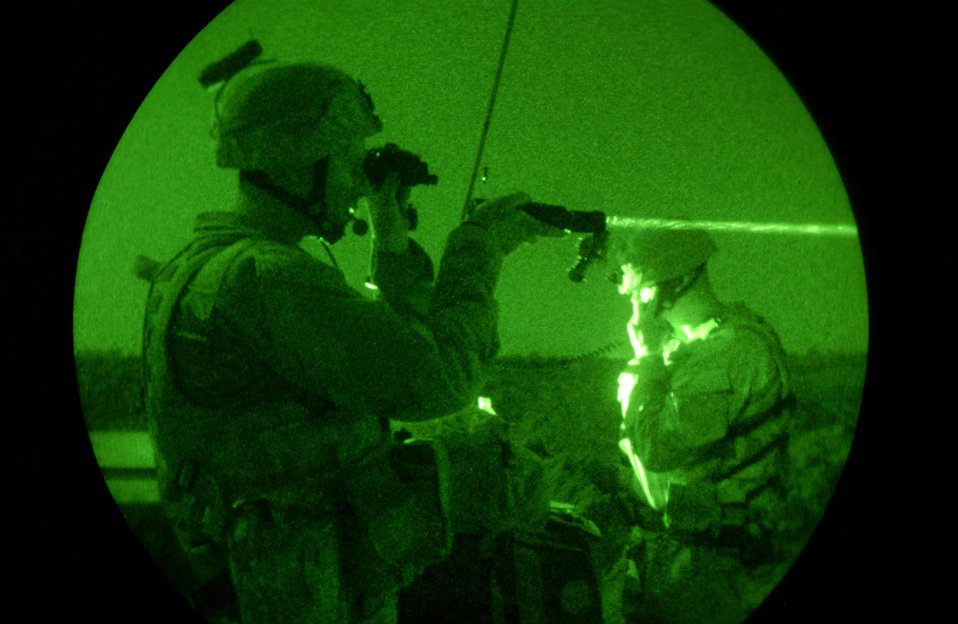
Night-mission vision

IRAQ -- Tech. Sgt. Scott McDaniel (background) talks to inbound aircraft as Staff Sgt. Carl Hill uses a laser to highlight a target during a weapons interdiction mission here May 31. Sergeants McDaniel and Hill are both tactical air control party Airmen with the 116th Expeditionary Air Support Operations Squadron.